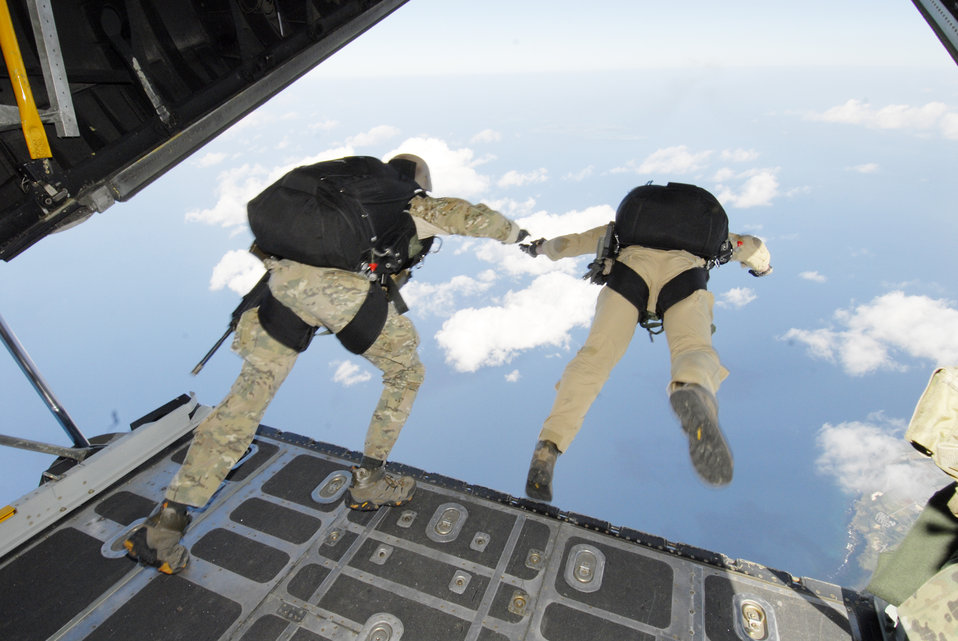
Off we go

Lt. Col. Stephen Goodman (left) and Capt. Robert Wilson perform a high-altitude low-opening jump over Ie Shima Island, Japan, Dec. 23, 2009. The jump was part of routine training for the 320th Special Tactics Squadron, and the 31st Rescue Squadron at Kadena Air Base, Japan. The colonel and captain are assigned to the 31st RQS.